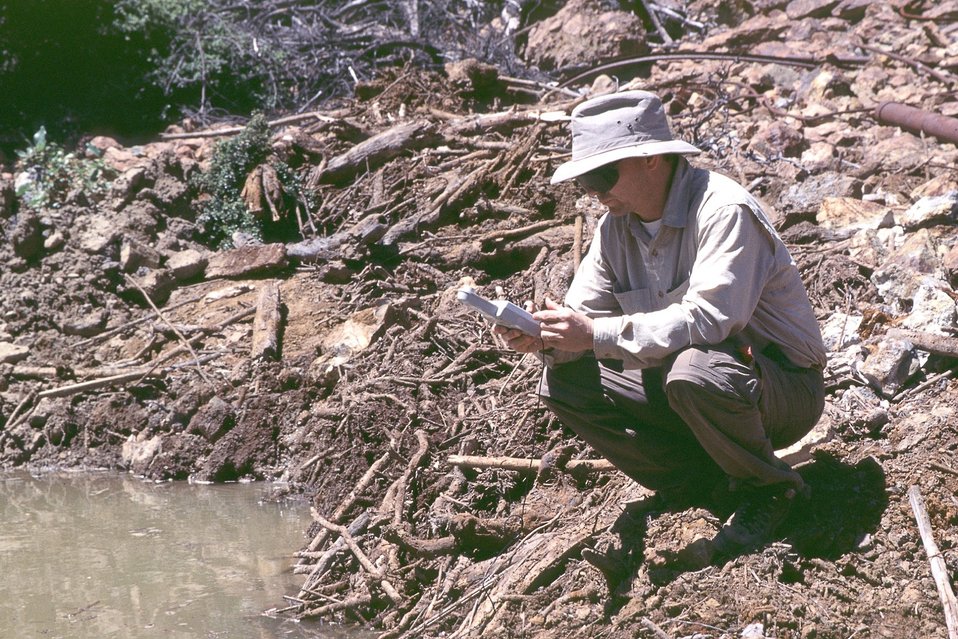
Almeda Mine, Medford District. Testing water pH.